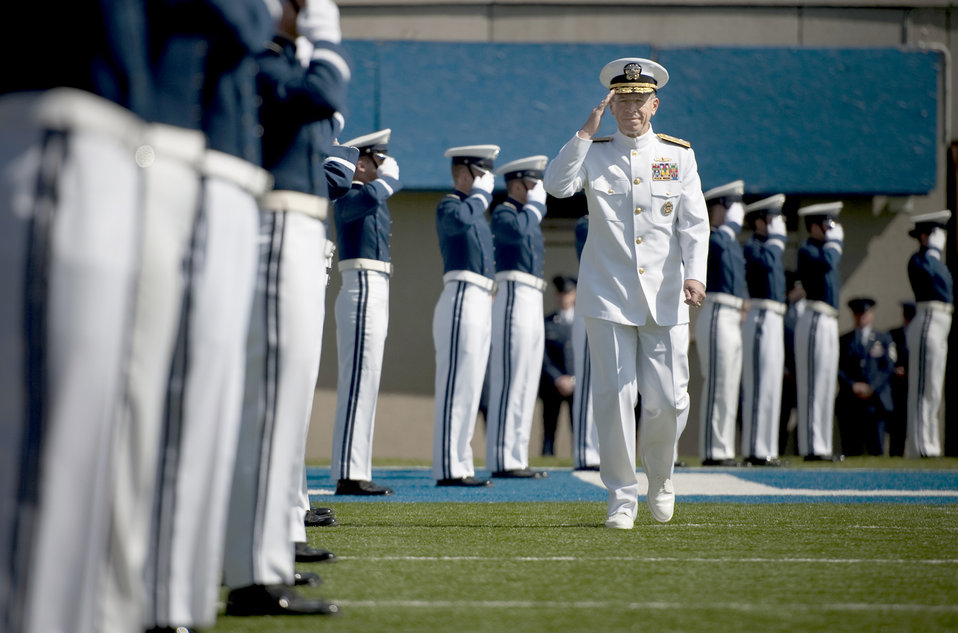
Cleared for release by Joint Staff Public Affairs

The Chairman of the Joint Chiefs of Staff Adm. Mike Mullen arrives at the U.S. Air Force Academy's Falcon Stadium for graduation ceremony May 26, 2010. Admiral Mullen is the first Joint Chiefs chairman to deliver the Academy's commencement address.